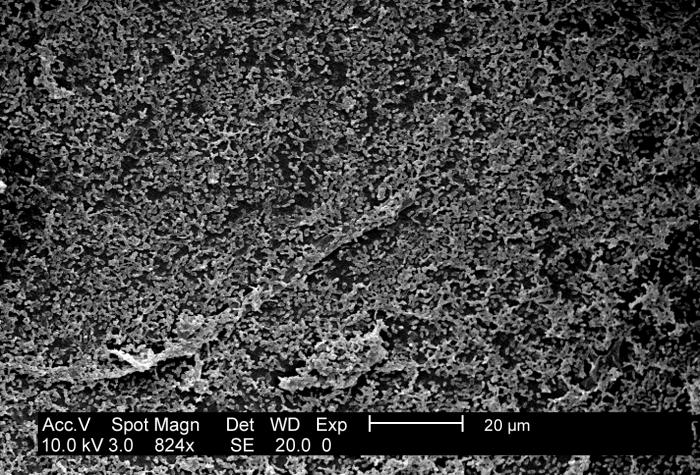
This SEM depicts a P. mirabilis (ATCC 29906) biofilm growing on PC (polycarbonate) coupons using a CDC biofilm reactor.